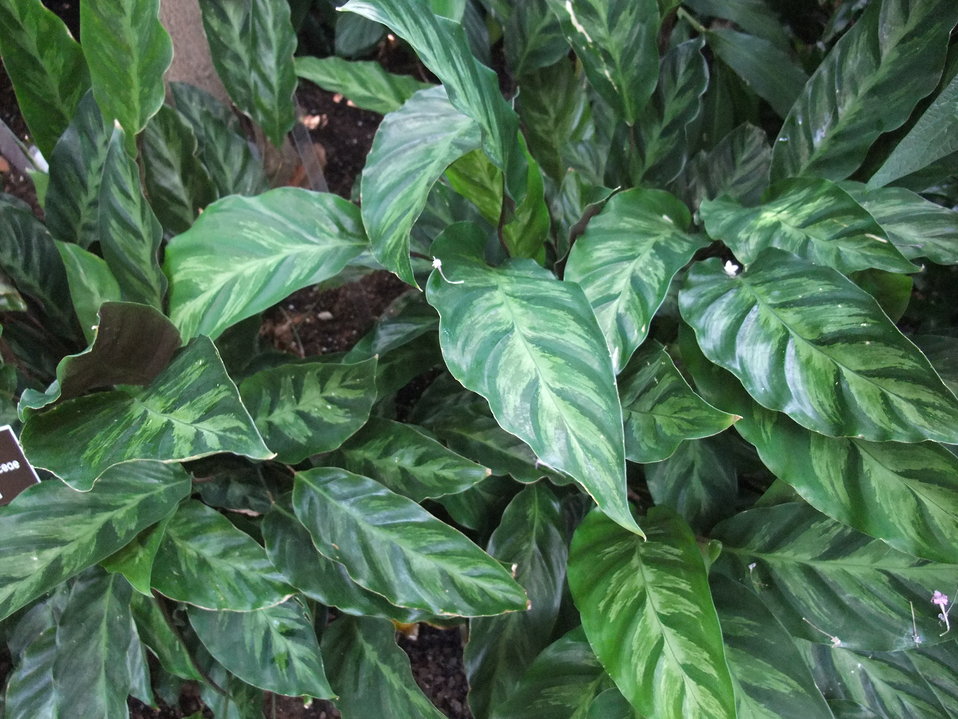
A photograph of Calathea louisae.